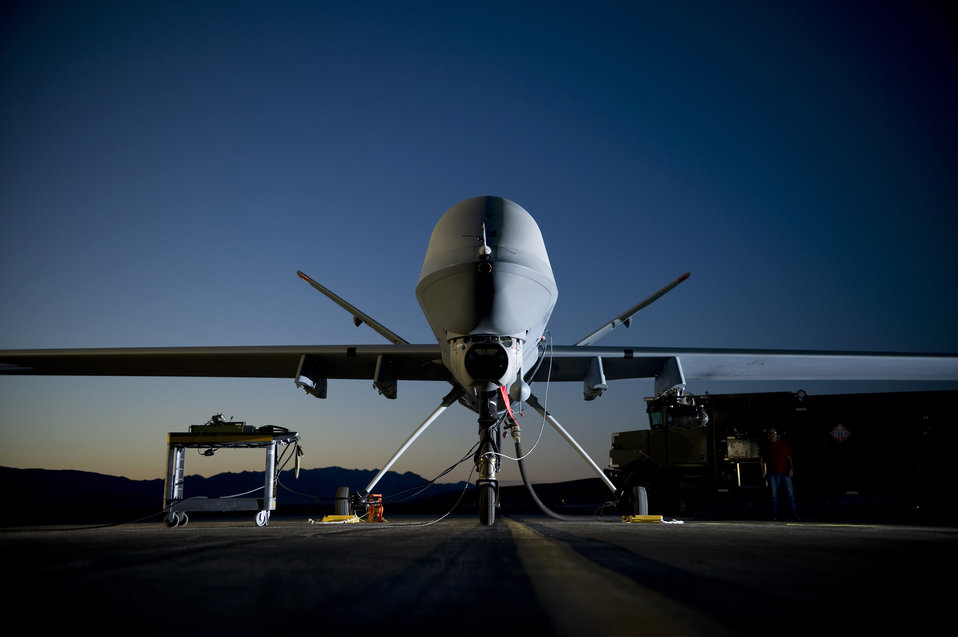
Air Force, Army leaders lay out joint UAS future

An MQ-9 sits on the flightline at Creech Air Force Base, Nev. Task 11, an enabling concept that outlines the effects, capabilities and missions both the Army and the Air Force are to develop as their unmanned aircraft systems programs move forward, was developed at last year's Army/Air Force Warfighter talks. It provides guidance to both services on how to organize, train, and equip their UAS forces to provide maximum flexibility to a joint forces commander.